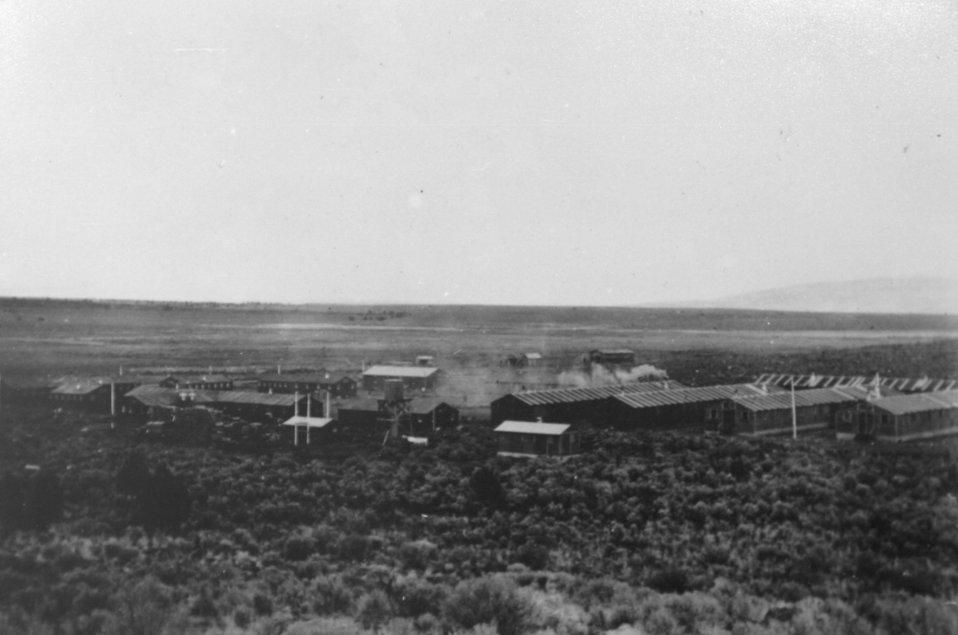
CCC camp at Gap Ranch west of Riley, Oregon. circa 1940 Photograph Joe Urbanek